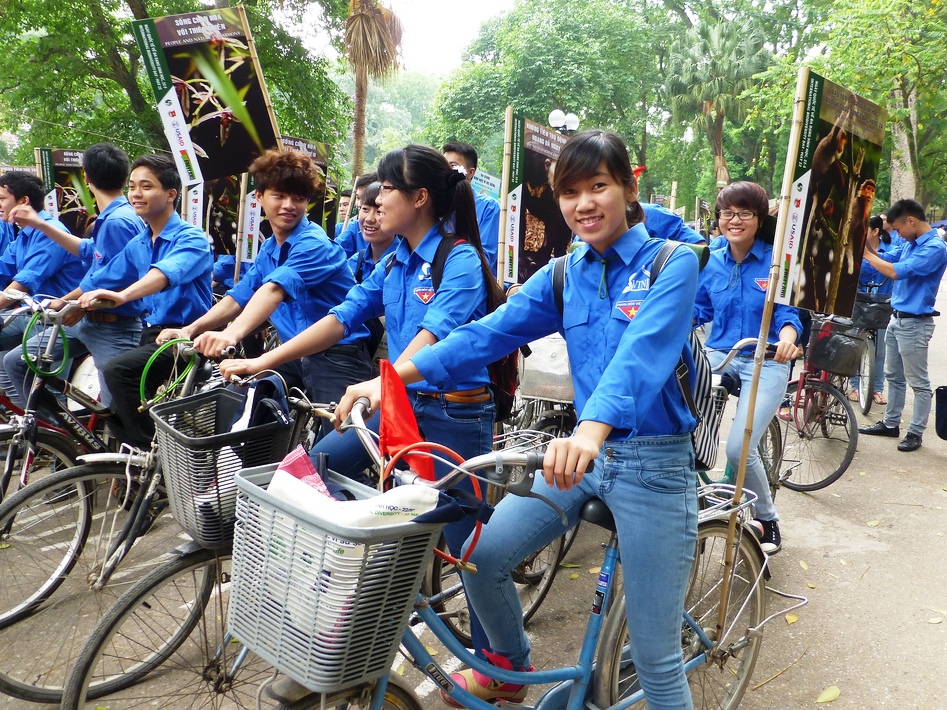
USAID Supports International Day for Biological Diversity in Hanoi